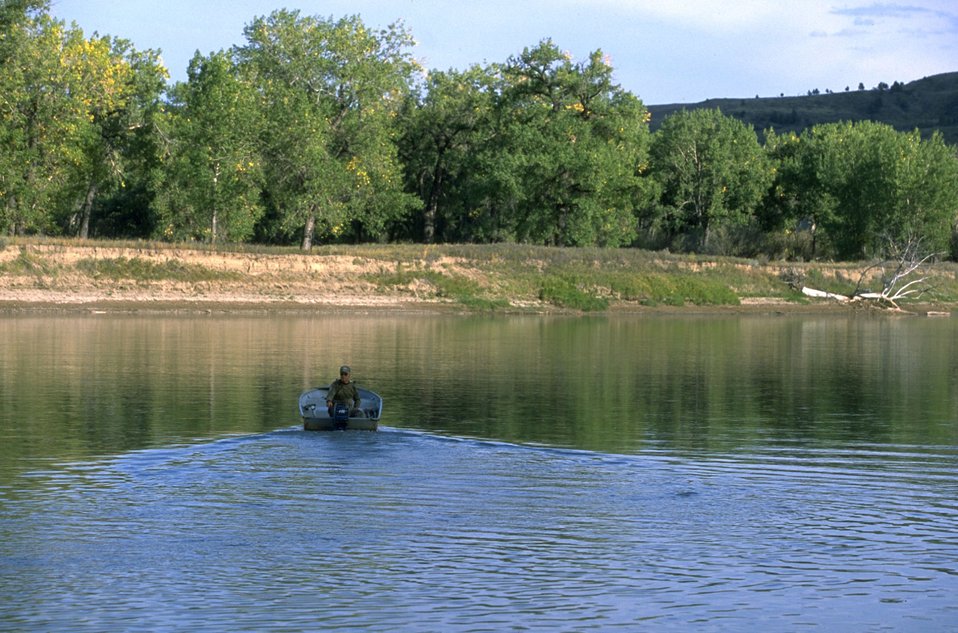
Motorboat at Kipp Recreation Area